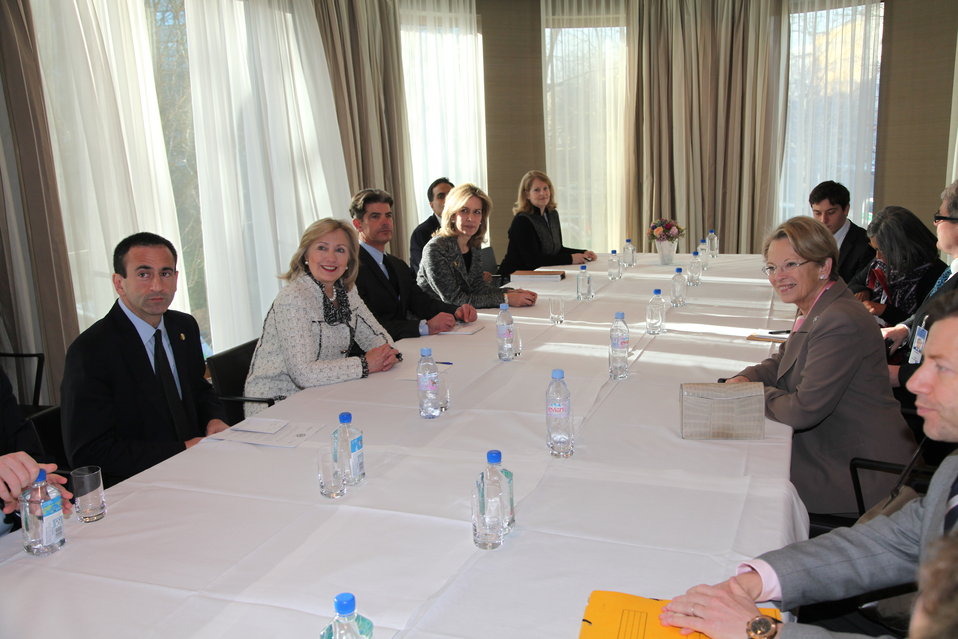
Secretary Clinton Holds a Bilateral Meeting With French Foreign Minister Alliot-Marie

U.S. Secretary of State Hillary Rodham Clinton, with U.S. Assistant Secretary for Bureau of European and Eurasian Affairs Philip Gordon, left of the Secretary, holds a bilateral meeting French Foreign Minister Michele Alliot-Marie in Munich, Germany, on February 6, 2011.